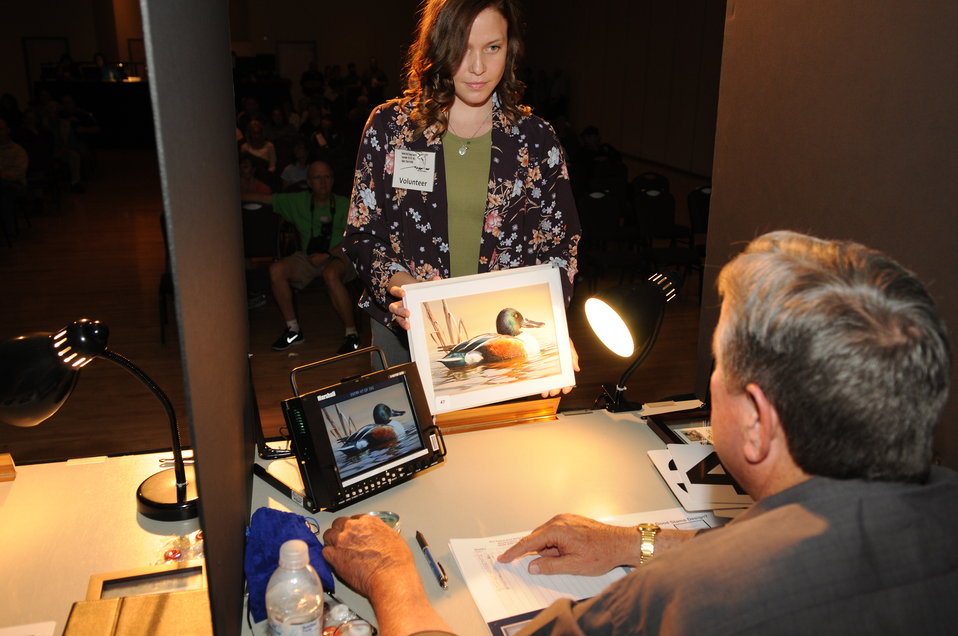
Judging

The U.S. Fish & Wildlife Service sponsored the 2012 Federal Duck Stamp Art Contest September 28 and 29 in Ogden, Utah, at Weber State University. A panel of five judges was responsible for choosing the art work used to design the 2013-2014 Migratory Bird Hunting and Conservation Stamp.